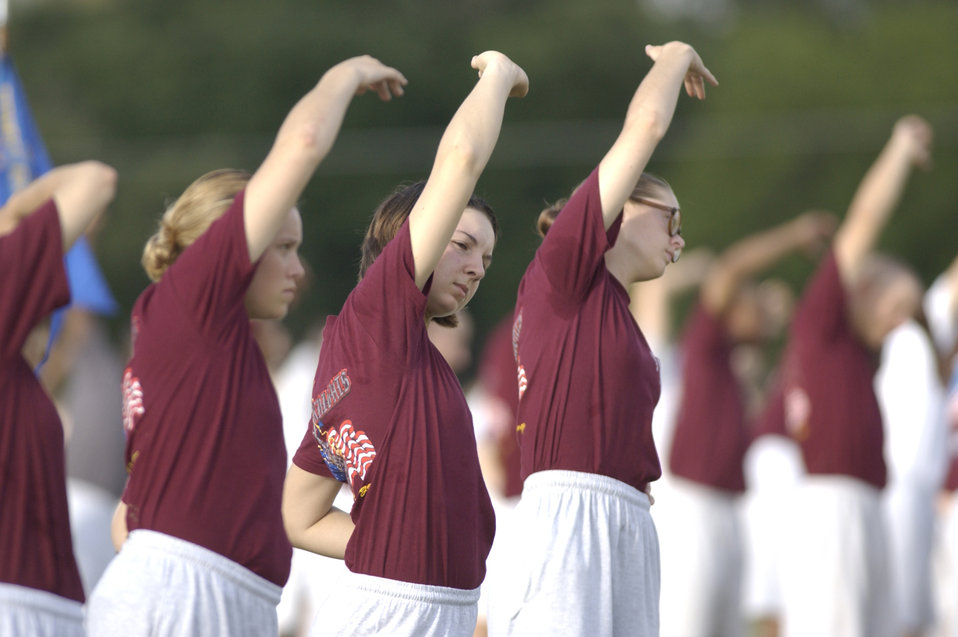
Tomorrow's leaders

LACKLAND AIR FORCE BASE, Texas -- Trainees stretch their muscles to prepare for a 2.5-mile formation run which marks the final days of Basic Military Training. As the Air Force transforms into a force that focuses more on physical fitness, so has military training.